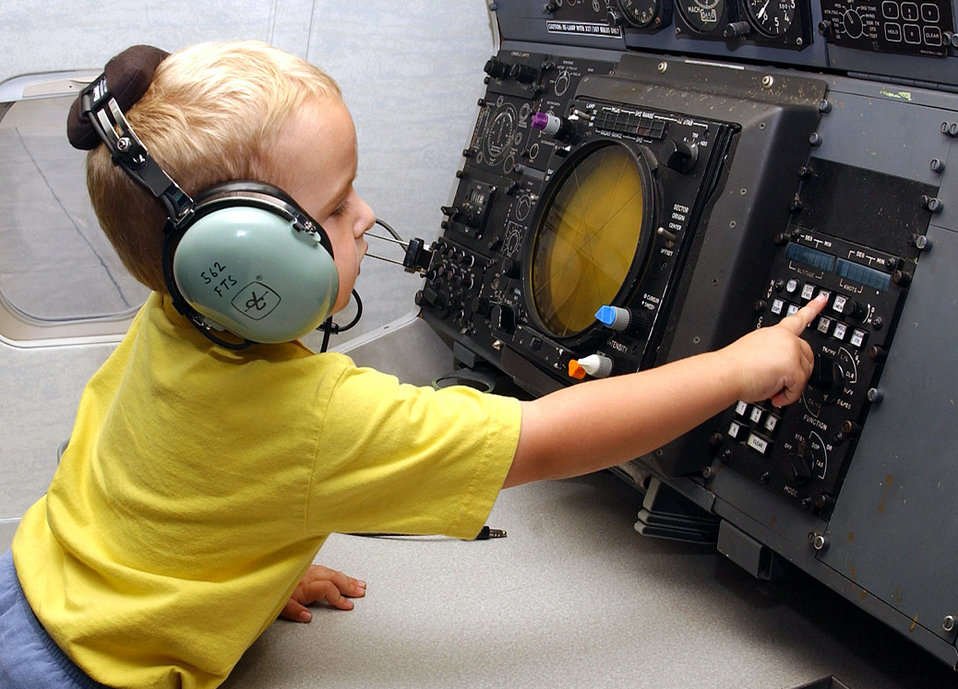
Cleared for takeoff

RANDOLPH AIR FORCE BASE, Texas -- Austin Williams pretends to navigate a T-43A on the flightline here April 22. The 3-year-old is the son of Melinda and Capt. John Williams of the 562nd Flying Training Squadron. He participated in a tour of the trainer aircraft as part of the family support center's moms, pops and tots group. The group is a play group for military families with children 5 and younger.